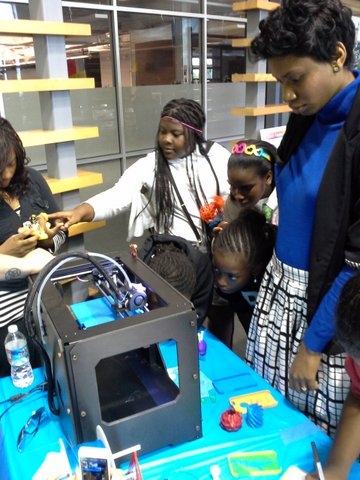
Sept 14 2013 Girls in STEM Summit

Director Dot Harris speaks to middle and high school girls in Baltimore at the Girls in STEM Summit this Sept.